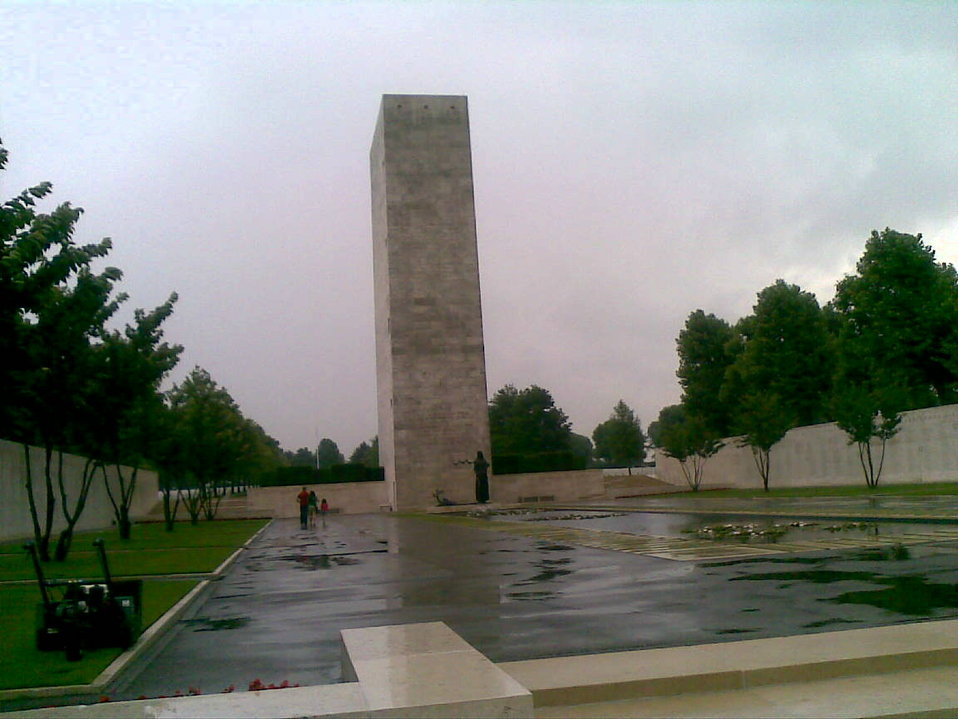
Deutsch: Netherlands American Cemetery, Turm mit Kapelle